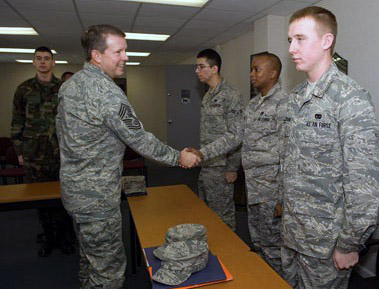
CMSAF outlines Air Force priorities to Dover Airmen

Airman Basic Alexander Timchula, Airmen 1st Class Jose Vizcarra, John Ntwiga and Clayton Jackson meet Chief Master Sgt. of the Air Force Rodney J. McKinley at the First Term Airman Center Feb. 11 at Dover Air Force Base, Del. Chief McKinley lauded Basic Military Training, technical schools and FTAC for generating first-rate Airmen and expressed necessity for peer Airmen and supervisors to continue in the mentorship of new Airmen.